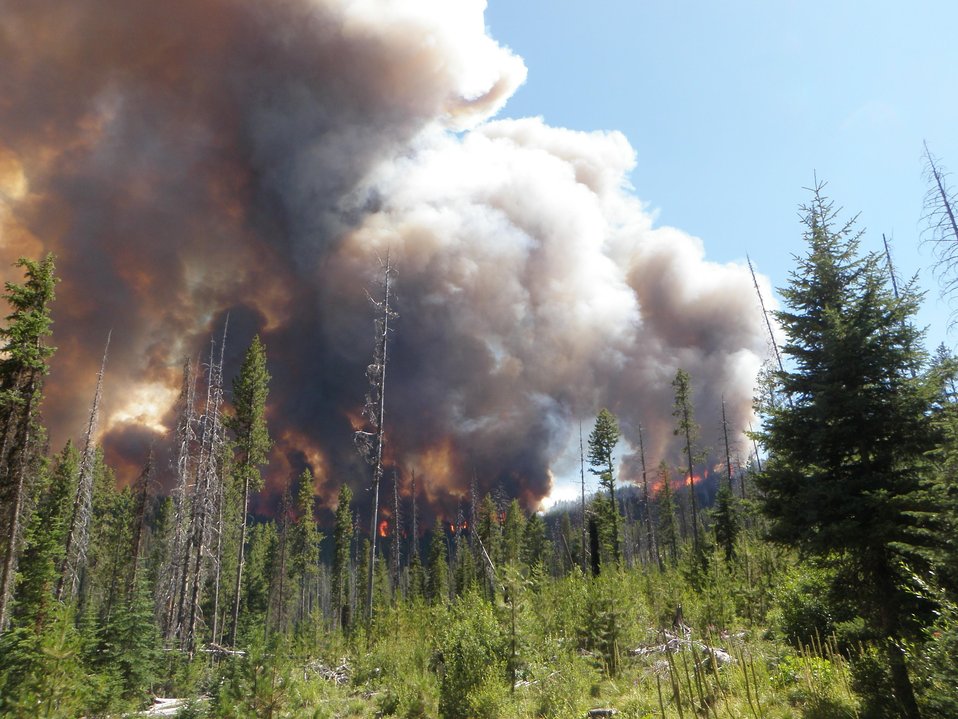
The Gold Pan Fire in the Bitterroot National Forest near Conner, MT began by lightning on Jul. 16, 2013 by lighting have consumed approximately 16,330 acres.